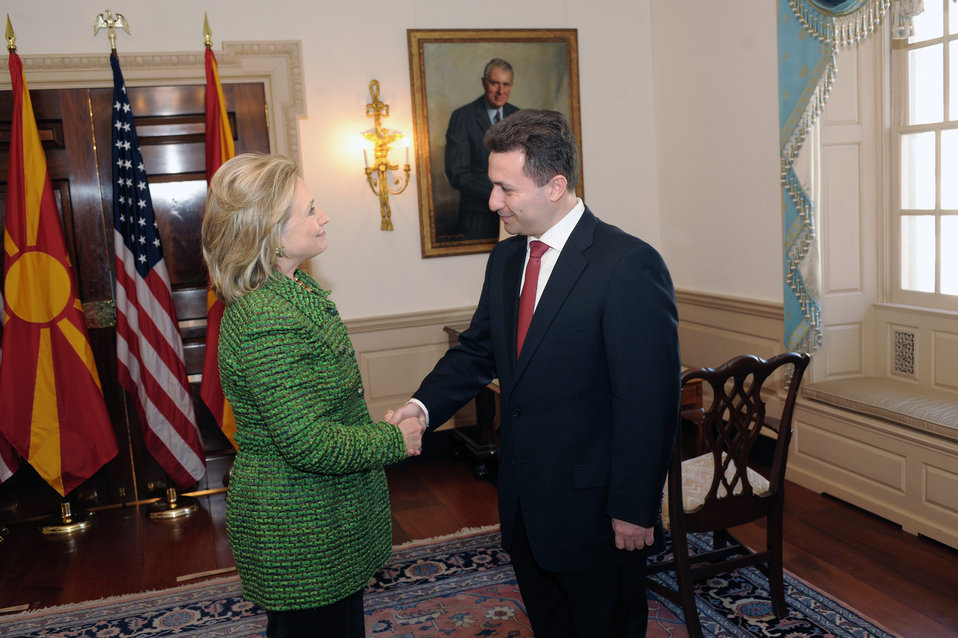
Secretary Clinton Shakes Hands With Macedonian Prime Minister Gruevski

U.S. Secretary of State Hillary Rodham Clinton shakes hands with Macedonian Prime Minister Nikola Gruevski after their bilateral meeting at the U.S. Department of State in Washington, D.C., on February 16, 2011.